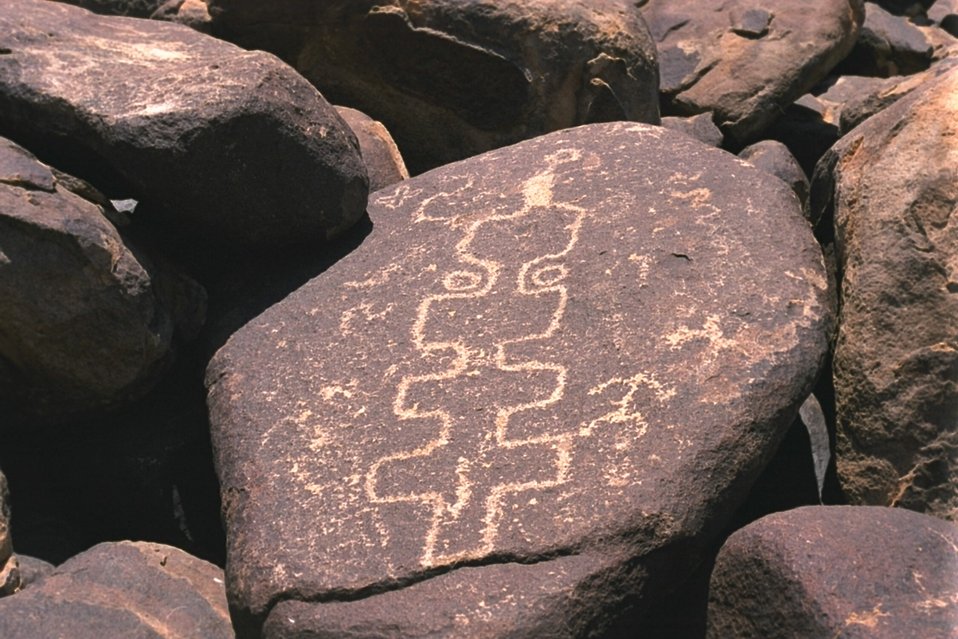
Wonderful petroglyphs can be found in the Ironwood Forest Naitonal Monument at the Cocoraque Butte in the Archaeological District.